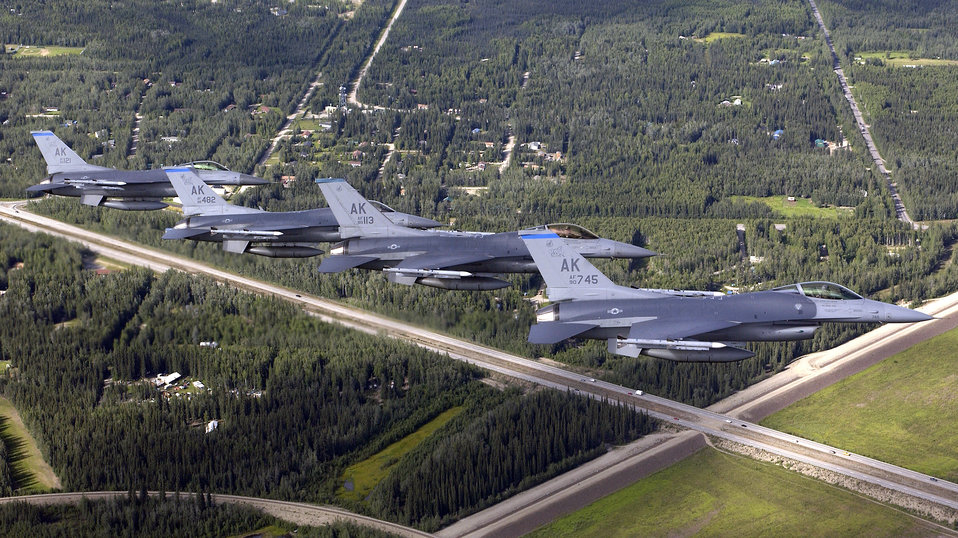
A nice day for a fly by

OVER EIELSON AIR FORCE BASE, Alsaka -- Four F-16C Fighting Falcons from the 18th Fighter Squadron fly in formation during a training mission here July 27.